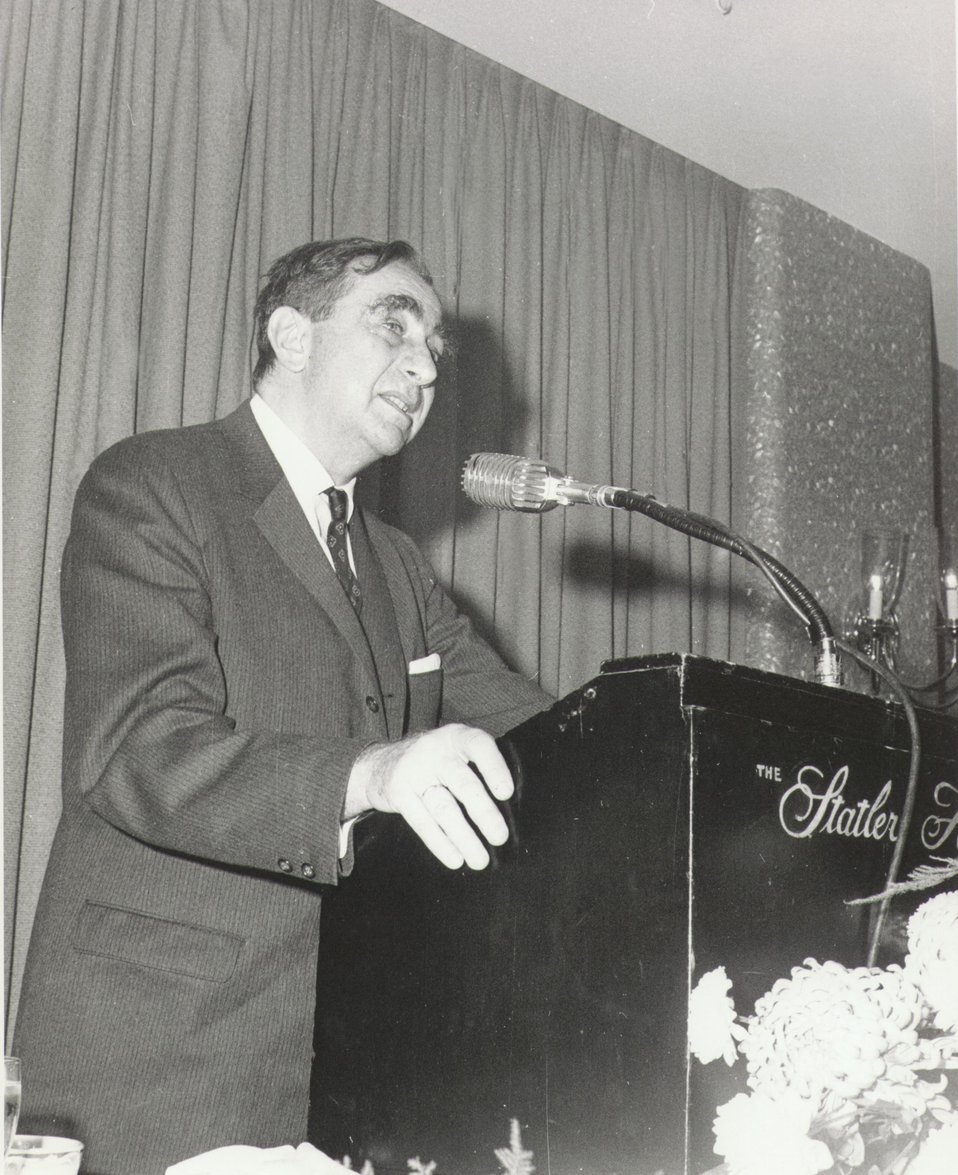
Fermi Award Ceremony for Teller in 1962.